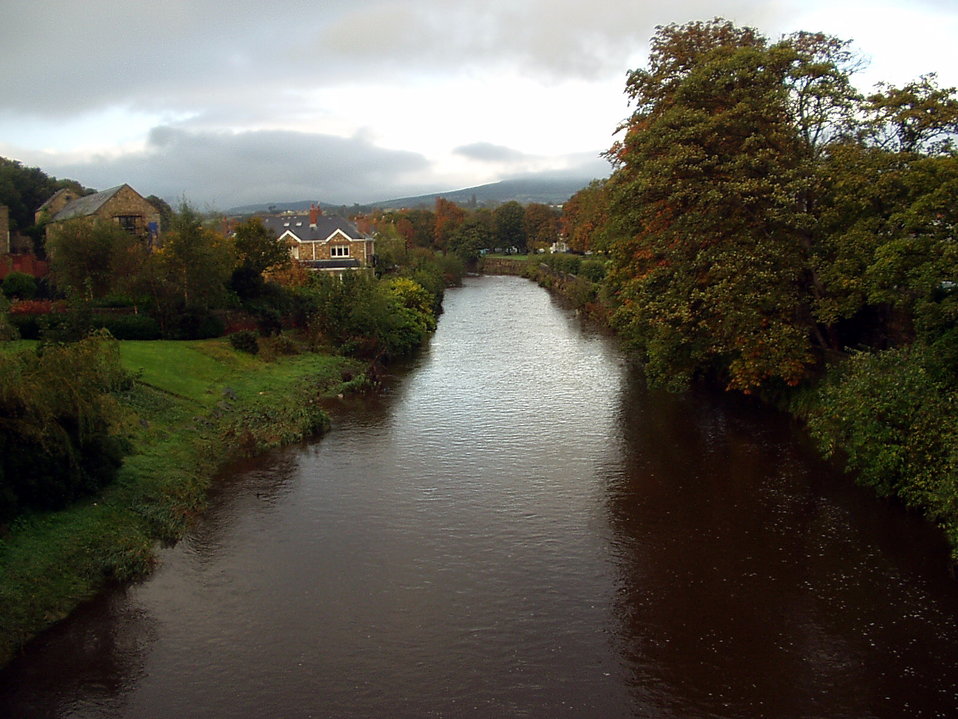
The River Dargle in the centre of Bray, County Wicklow its class